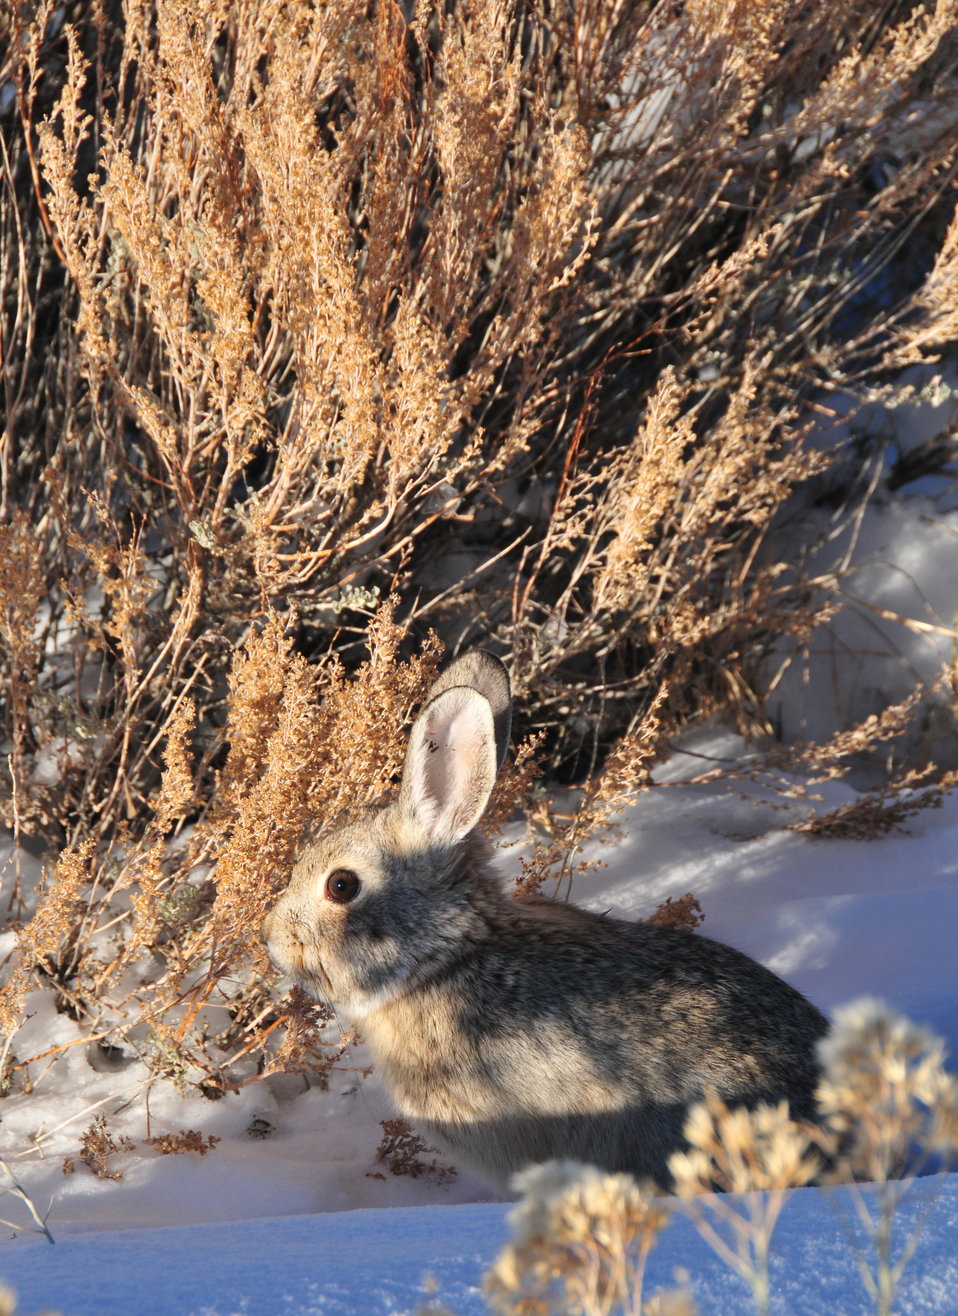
Pygmy Rabbit (Sylvilagus idahoensis) Seedskadee NWR 02

A pygmy rabbit (Sylvilagus idahoensis) feeds on sagebrush during the winter on Seedskadee NWR